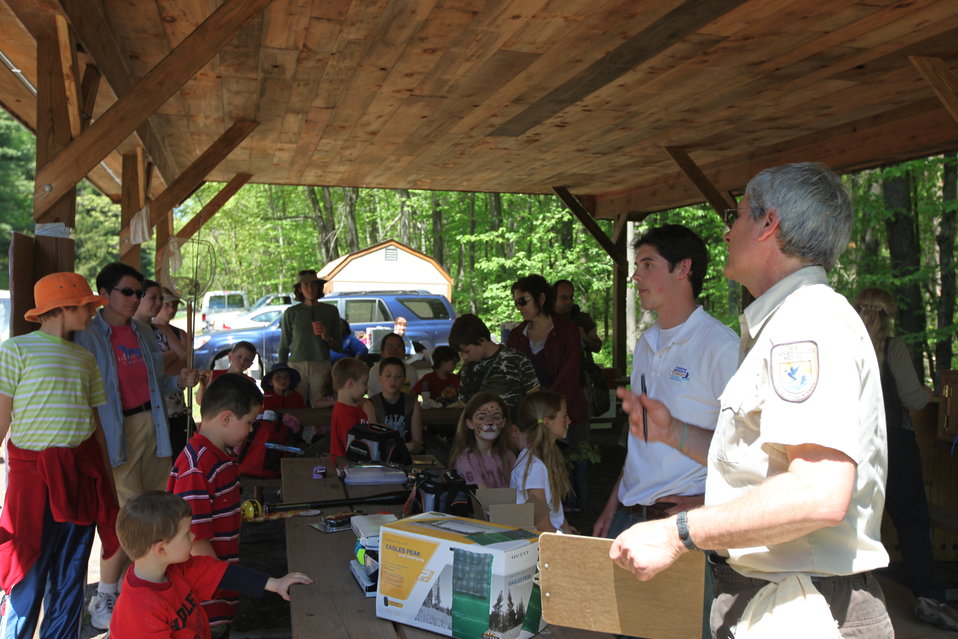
Youth Fishing Derby 2012

Megan Nagel/USFWS